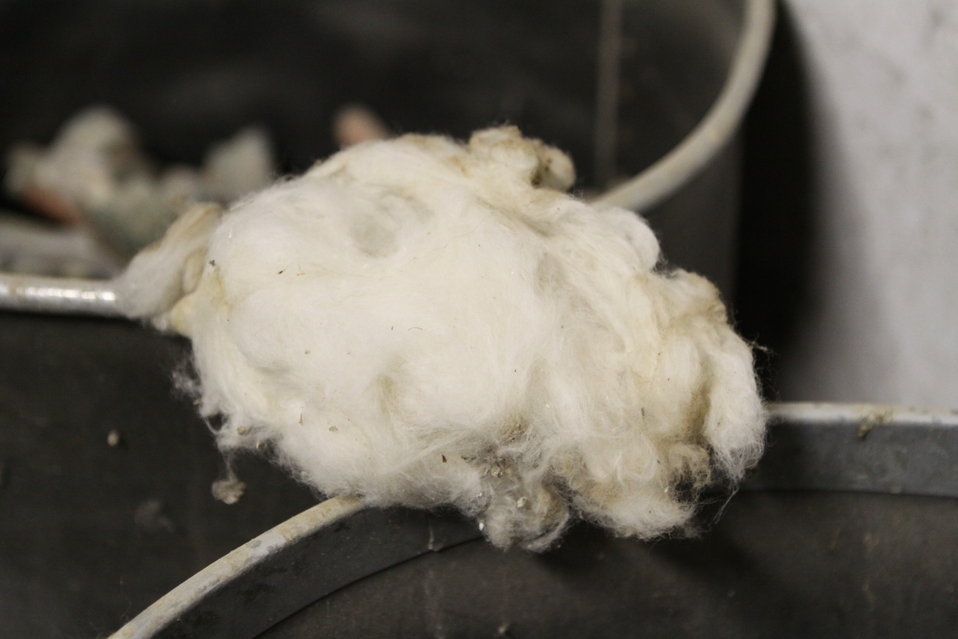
100525 Hirat Textile Company 752